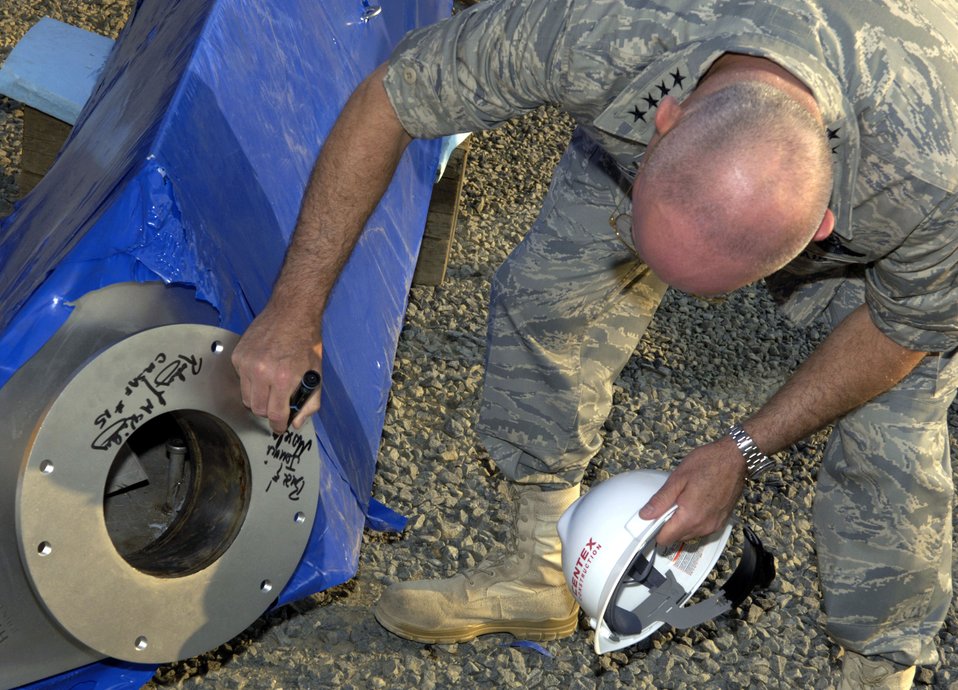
Air Force leaders sign memorial spire

Chief of Staff of the Air Force Gen. T. Michael Moseley signs the tip of the last spire to be added to the Air Force Memorial in Arlington, Va. on Aug. 3. The memorial is scheduled to be completed on Oct. 14.